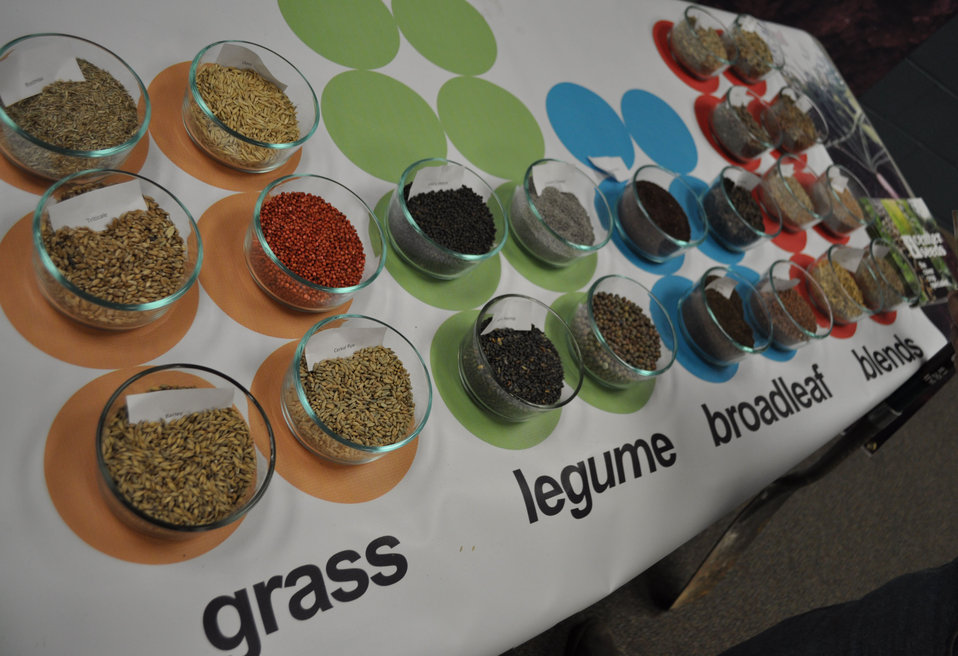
CIG-SC 4

The grant is studying the impacts of different types of cover crops.